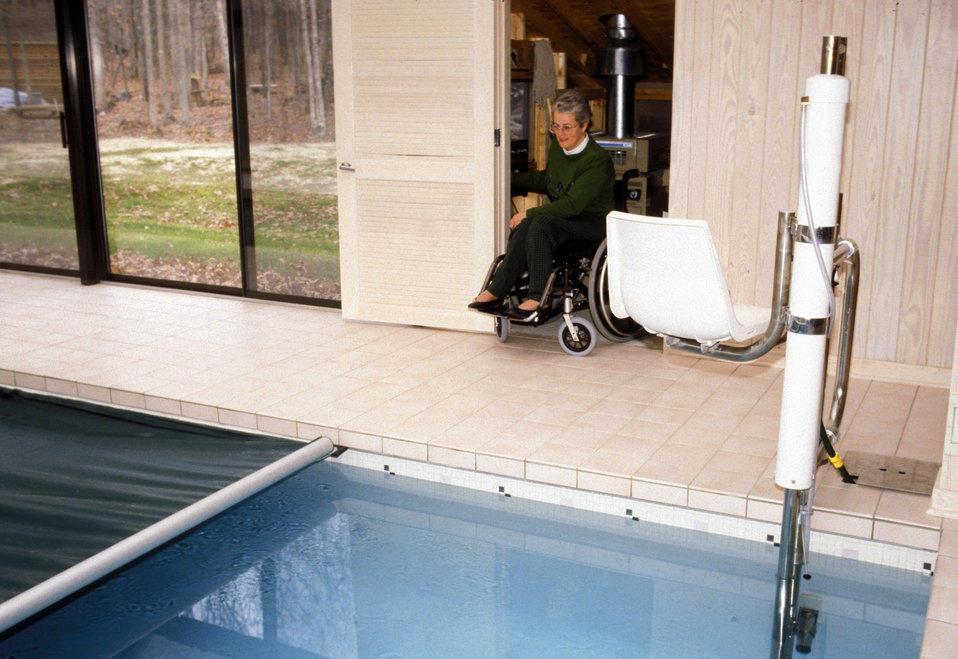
In this 1993 image (and see PHIL# 9086), a woman seated in her wheelchair was about to enter a publicly-accessible swimming pool by using a motorized lift. The lift, which was seen here, faced away from the pool, which would allow her to be seated in a comfortable position, then would rotate so that she'd be extended out over the water, and slowly lowered at will. The inclusion of such a device broadened the scope of its demographic usability, thereby, extending the accessibility to this facility to a wider range of participants. Designing recreation sites with the mobility-challenged in mind, makes for an overall more user-friendly environment for all, and is quite often, made even more efficient from a utilitarian standpoint.